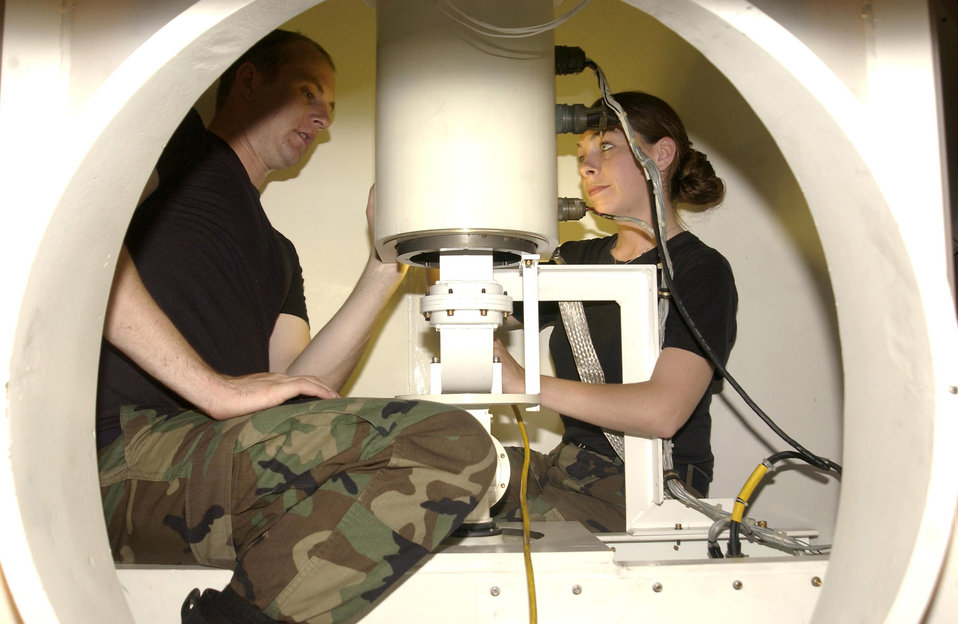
Weather reports

ORCUTT, Calif. -- Airmen 1st Class Eric Hanes (left) and Janina Kowalski make adjustments to the azimuth housing on the next generation weather radar located on New Love Hill here. Proper maintenance of the NEXRAD provides accurate data of the weather in the local area. Both Airmen are ground radar systems maintenance technicians assigned to the 30th Space Communications Squadron at Vandenberg Air Force Base, Calif.